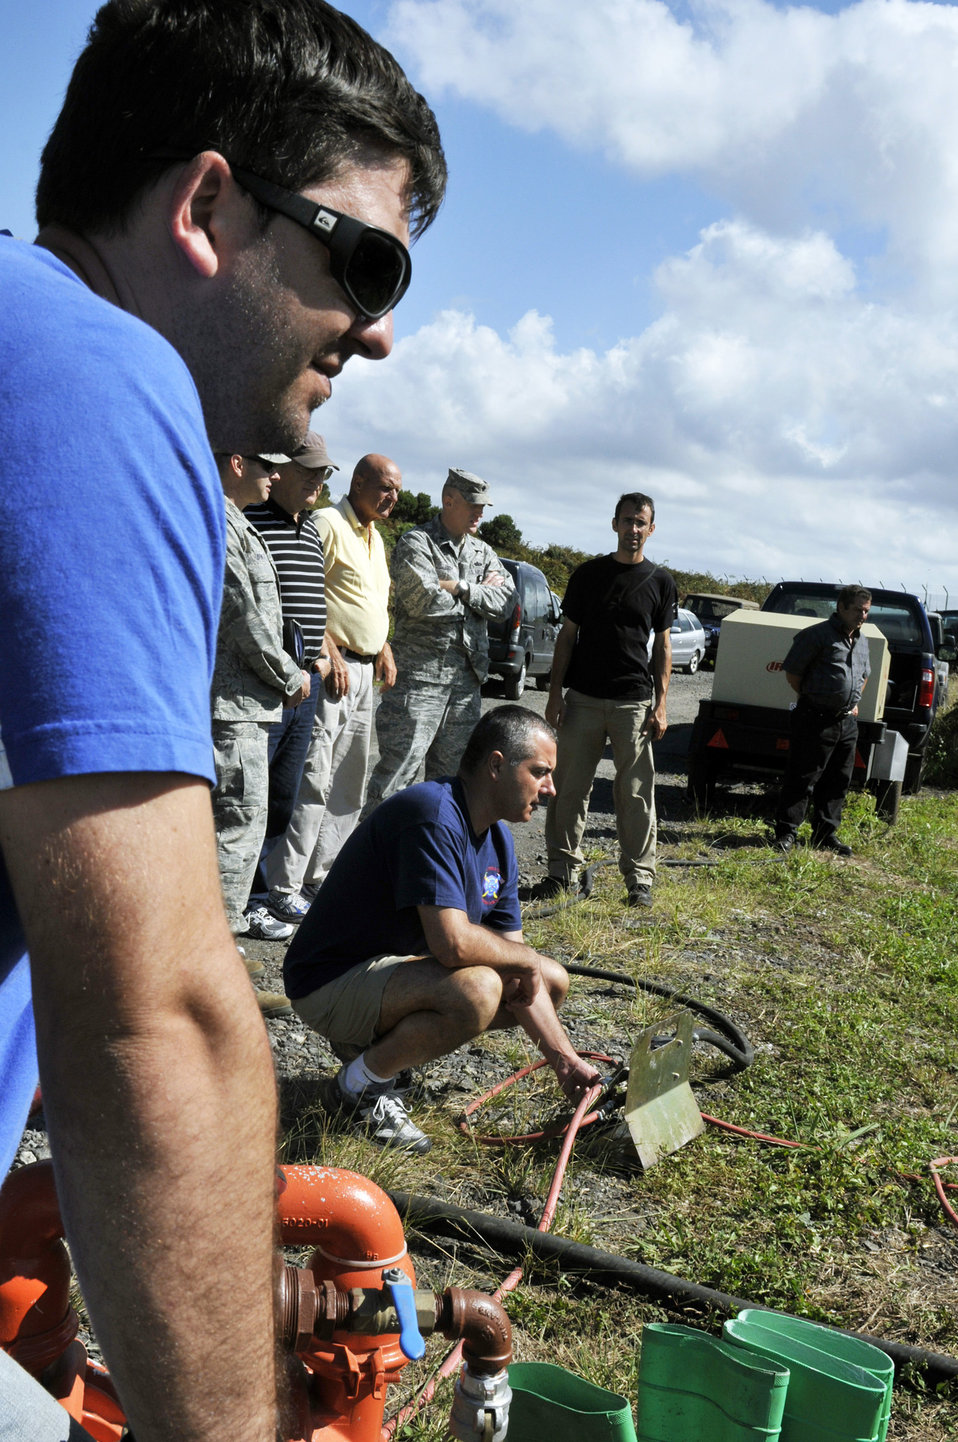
Lajes oil spill training

(Far left) Decio Avila and Jorge Arruda start a pump, which operates a boom and skimmer, during a land fuel spill training exercise, as other members observe Sept. 29, 2010, at Lajes Field, Azores. The joint exercise brought together more than 40 U.S. and host nation emergency response team members in a classroom-discussion setting and hands-on scenarios. Mr. Avila and Arruda are from the 65th Civil Engineer Squadron.